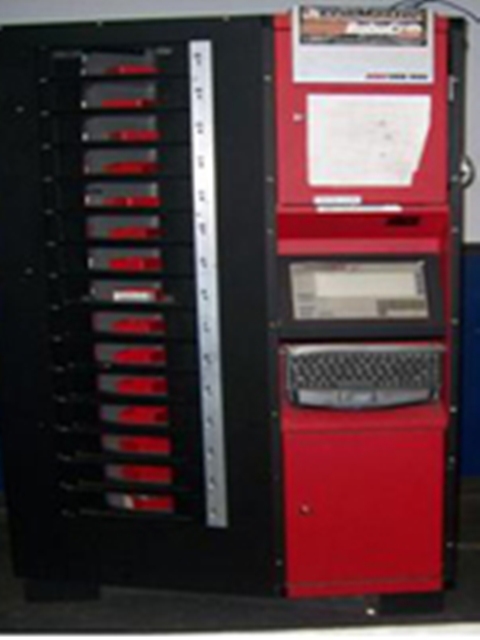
Automated bench stock dispenser

Automated bench stock dispensers, such as this one at an Air Mobility Command base, are being used by aircraft maintenance Airmen to improve operations. The use of the dispensers is part of an AMC initiative for Air Force Smart Operations for the 21st Century.